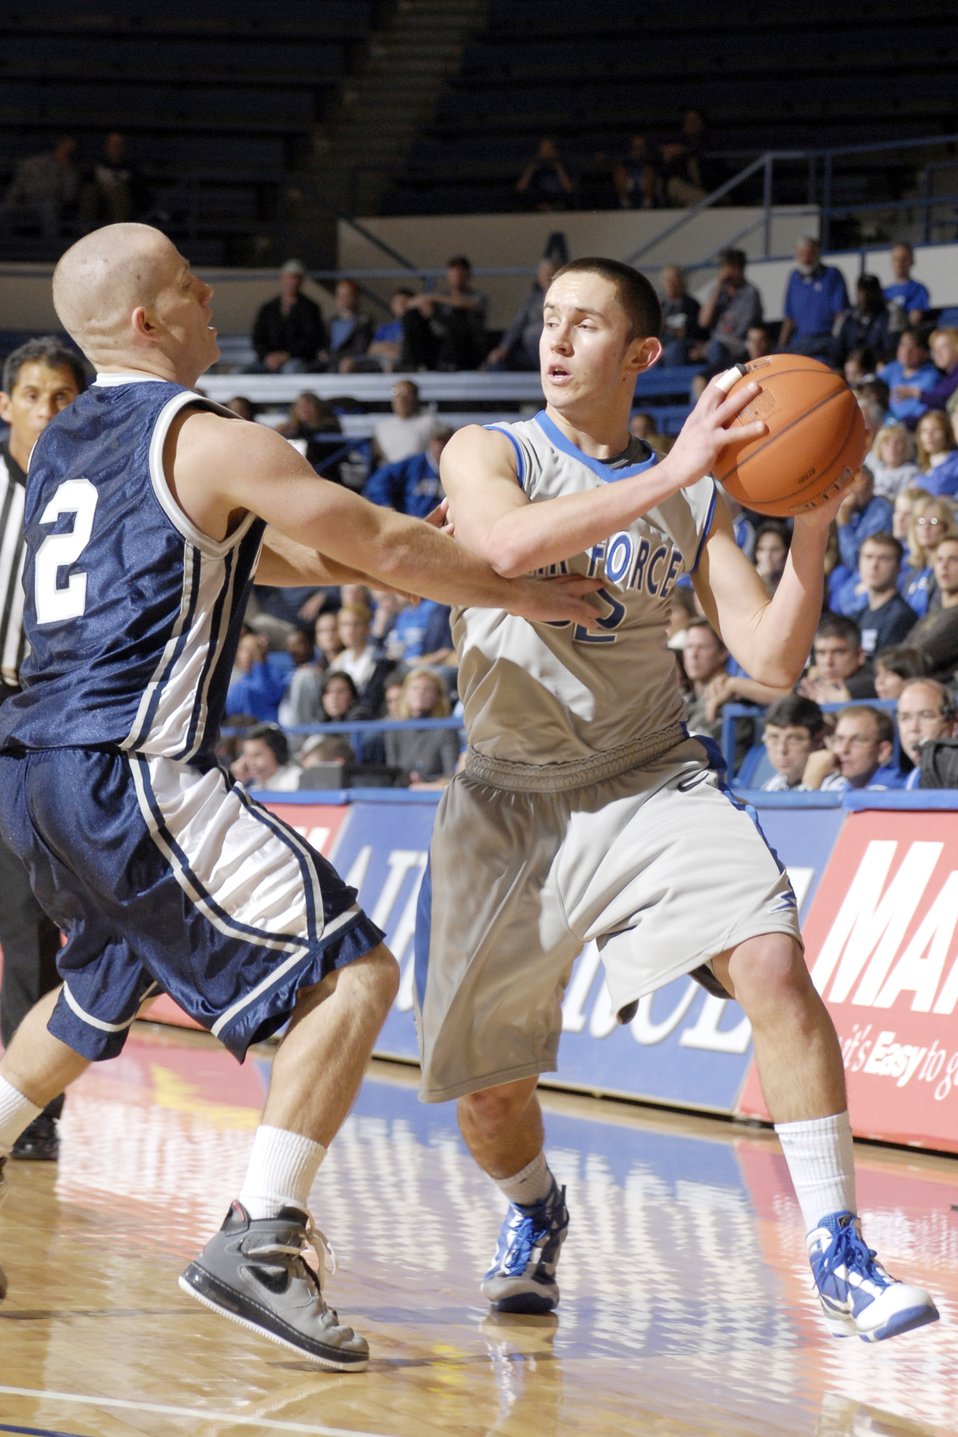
Falcons won 95-77

U.S. Air Force Academy, CO- Shawn Hempsey, a sophomore guard from Encinitas, CA looks to pass the ball past Dickinson State's Brian Lebsock during the Reggie Minton Air Force Classic at Clune Arena Nov 20. The Falcons won 95-77, but finished the tournament in 2nd place after a 70-46 loss to Northern Colorado in the championship game.